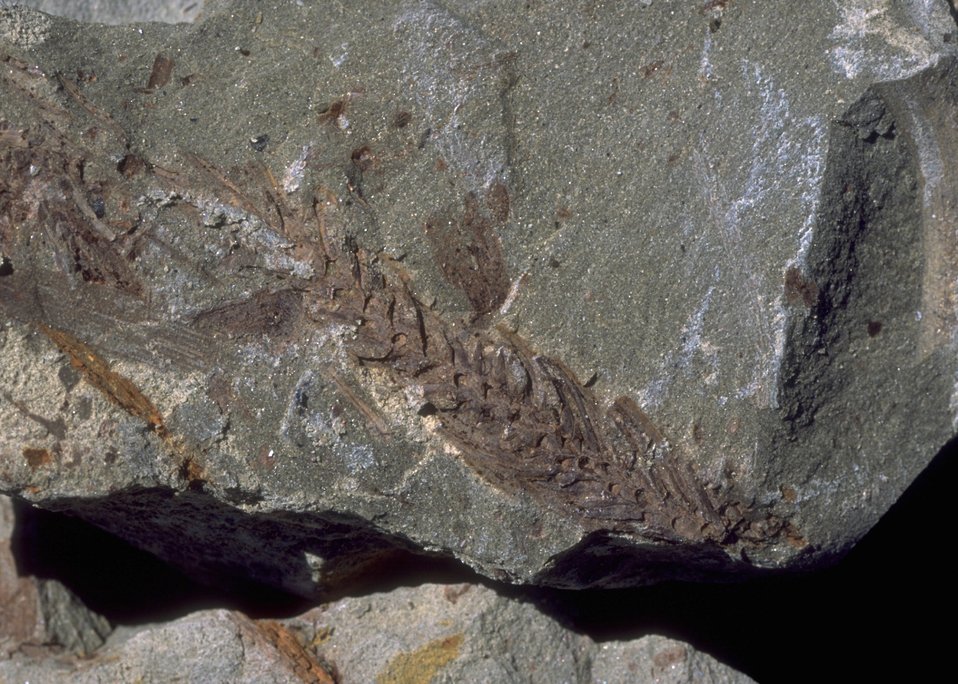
Close up of fossil vegetation, Cedar Ridge Paleo area, Worland Field Office.